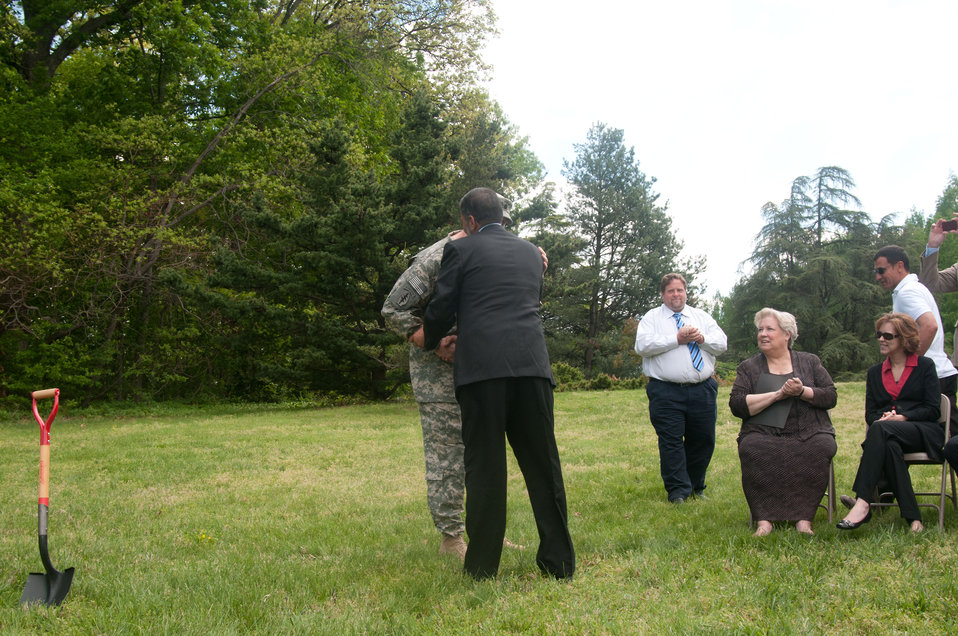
Director of Agribusiness Development Team (ADT) Program, National Guard Bureau Lt. Col. Howard Schauer (left) welcomes Ghazni Directorate of Agricultural Irrigation and Livestock Sultan Hossain with traditional Afghan welcome before the Afghan official spoke at the Arbor Day tree planting of a Cedrus deodara ('Karl Fuchs') at the U.S. National Arboretum, Washington, DC, on Friday, April 29, 2011. The tree is originally from Pakta Province and the most important tree in Afghanistan for timber.